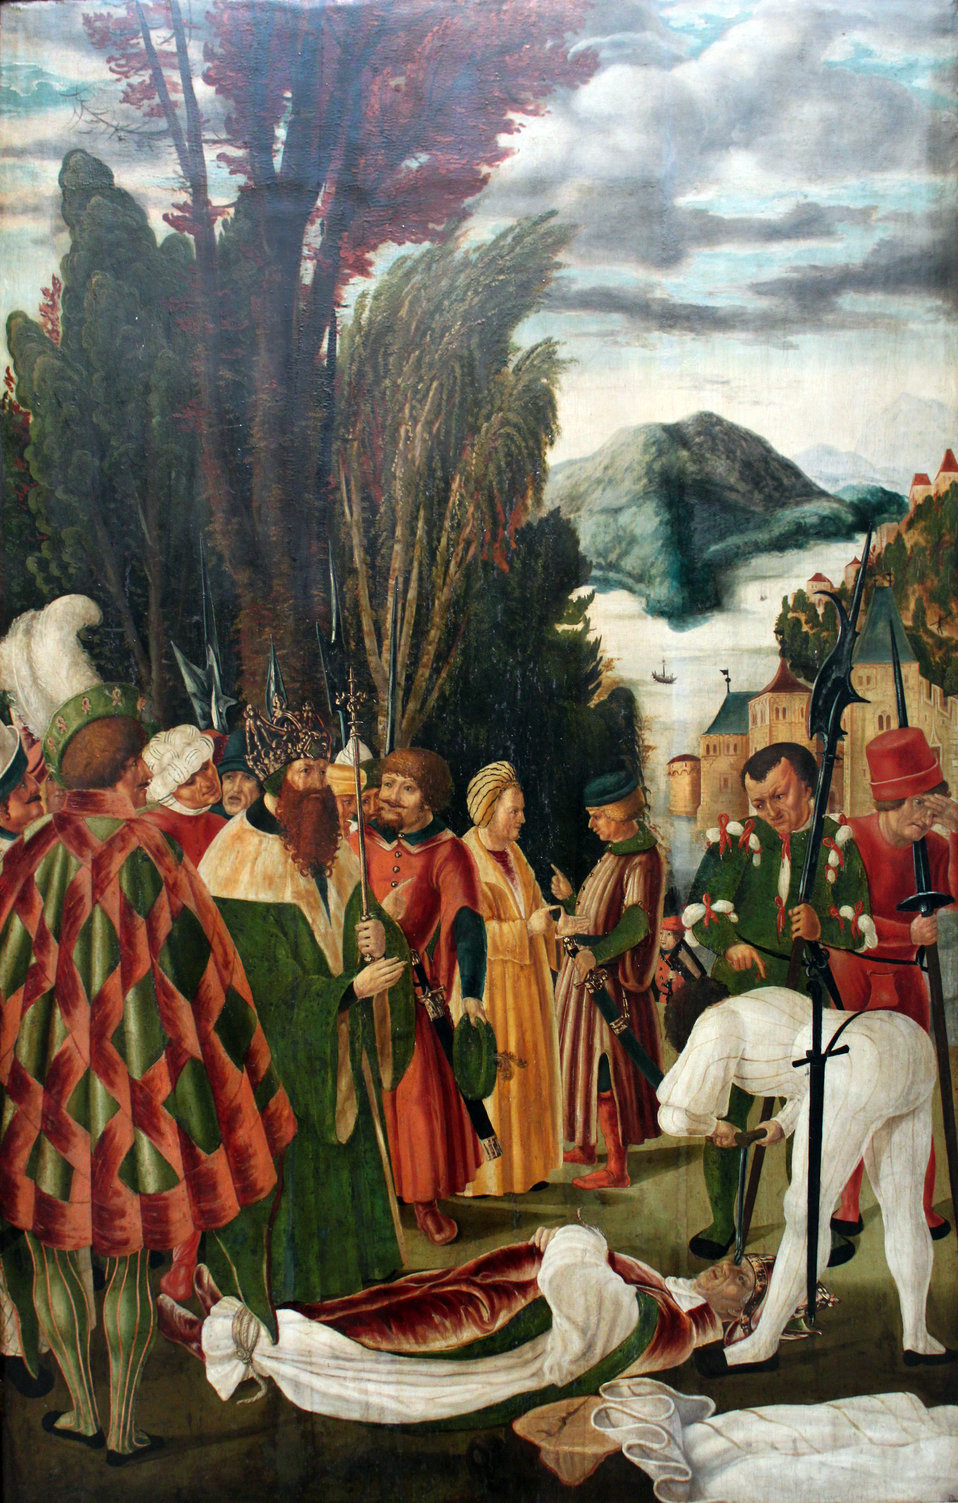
1515 Martyrium des hl. Leodegar von Autun anagoria